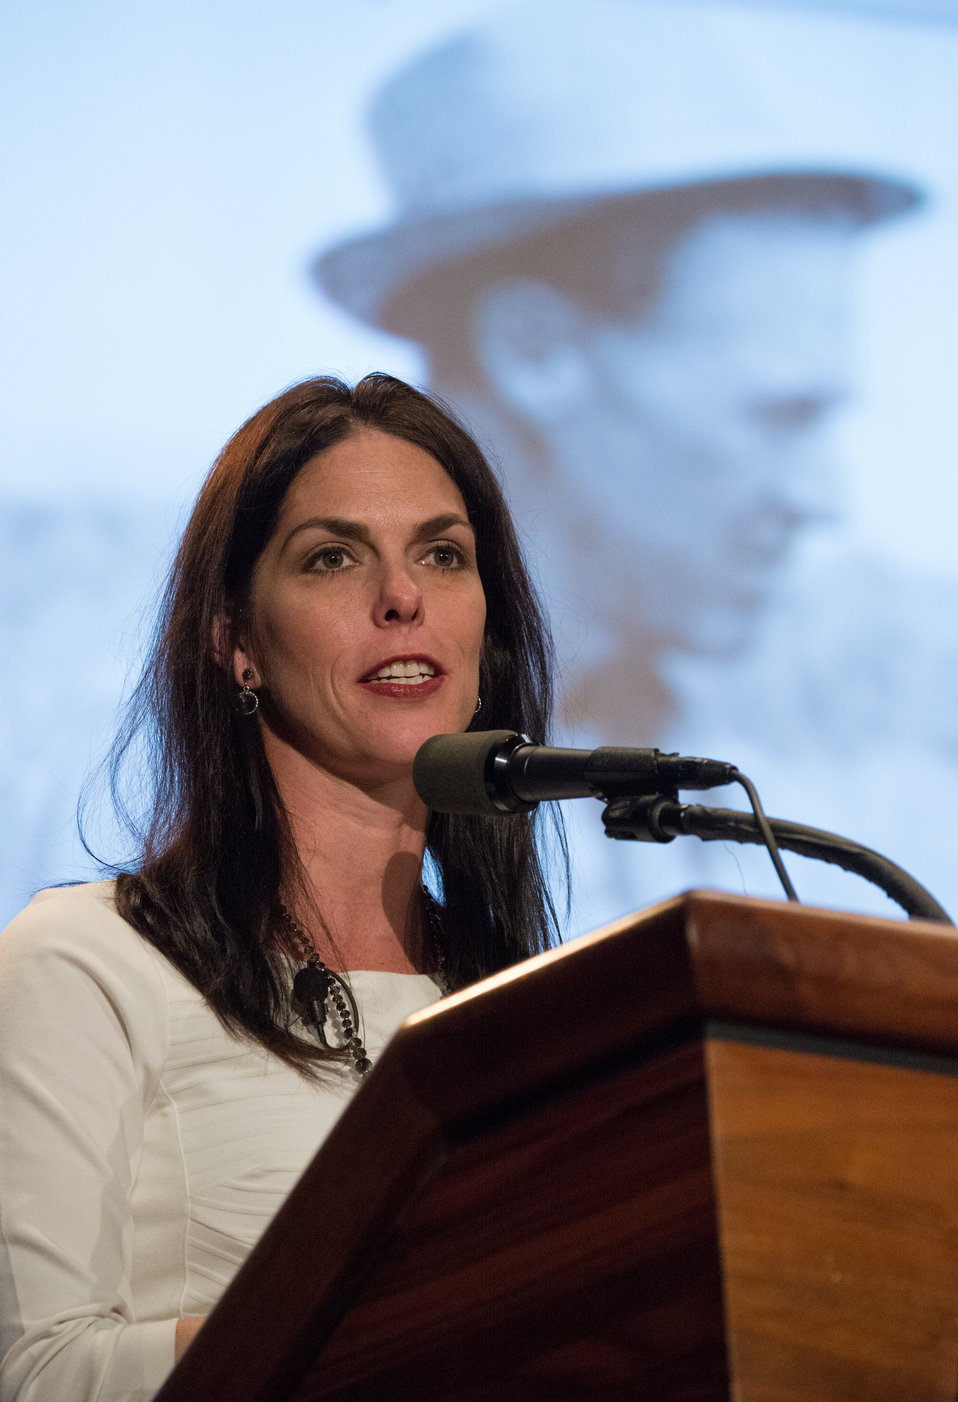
Borlaug Institute for International Agriculture at Texas A and ;M Director of External Relations and granddaughter of Dr. Norman Borlaug, Julie Borlaug moderates the Borlaug Symposium commemorating the late Dr. Borlaug's 100th Birthday held at the U.S. Department of Agriculture (USDA) Jefferson Auditorium of USDA in Washington, D.C., on Tuesday, Mar. 25, 2014. The symposium highlights current efforts addressing global hunger. The symposium panels will feature high school and university students, as well as, scientists and policy advisors at University of Maryland – Eastern Shore, University of Minnesota, The Norman Borlaug Institute for International Agriculture, Texas A and M University, Cornell University, Iowa State University, and the World Food Prize.